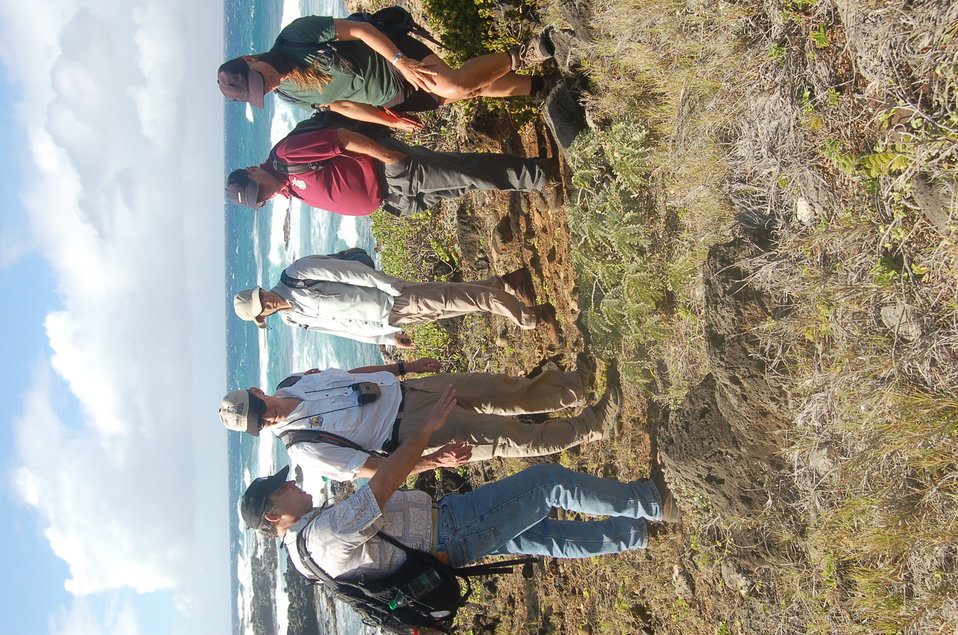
Dan Ashe tours Ka'ena Point State Park in Hawaii

USFWS Director Dan Ashe at Ka'ena Point State Park with USFWS employees.